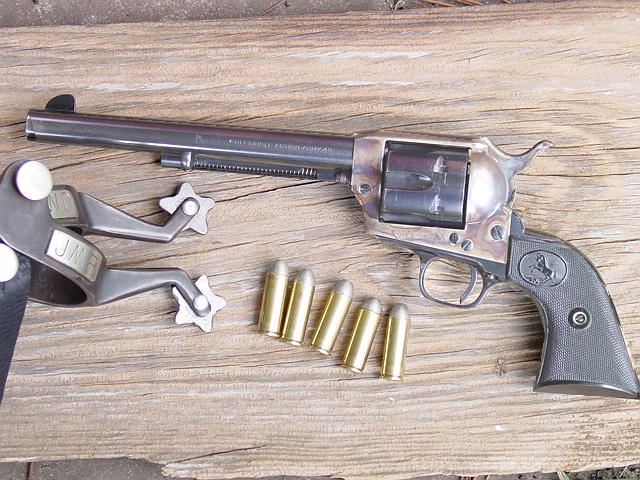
Left side second generation colt from 1965